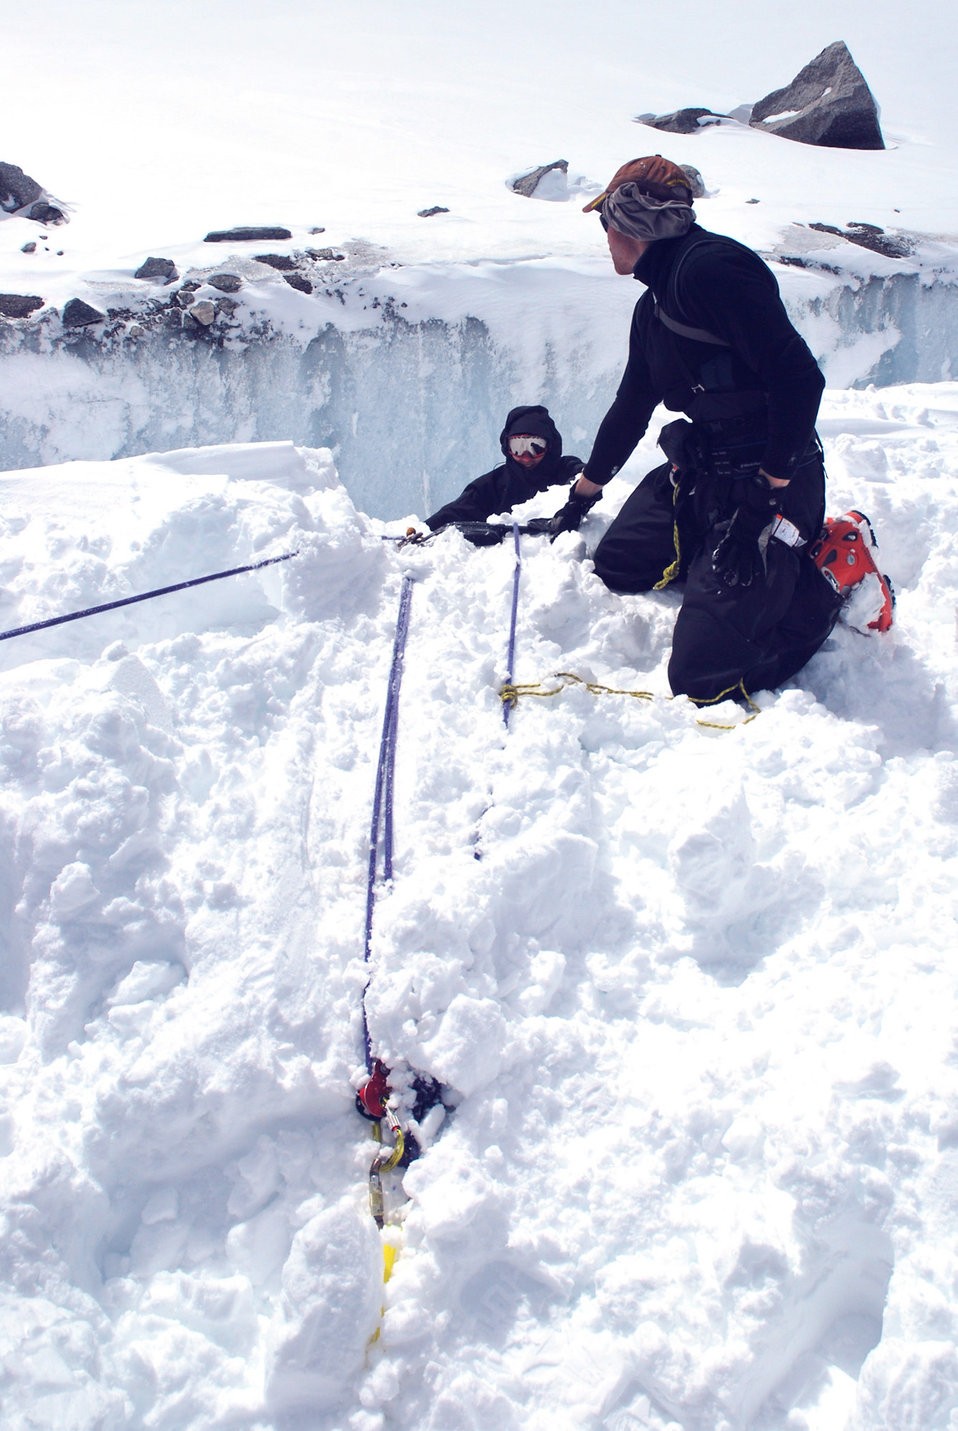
Alpine pararescuemen train for mountain rescues

Pararescuemen practice crevasse rescue training April 2, 2010, in the mountains above Chamonix, France. The Airmen spent two weeks in the mountains refining their mountain rescue techniques so they can be better prepared for this hazardous type of rescue. The pararescuemen are assigned to the 56th Rescue Squadron at RAF Lakenheath, England.